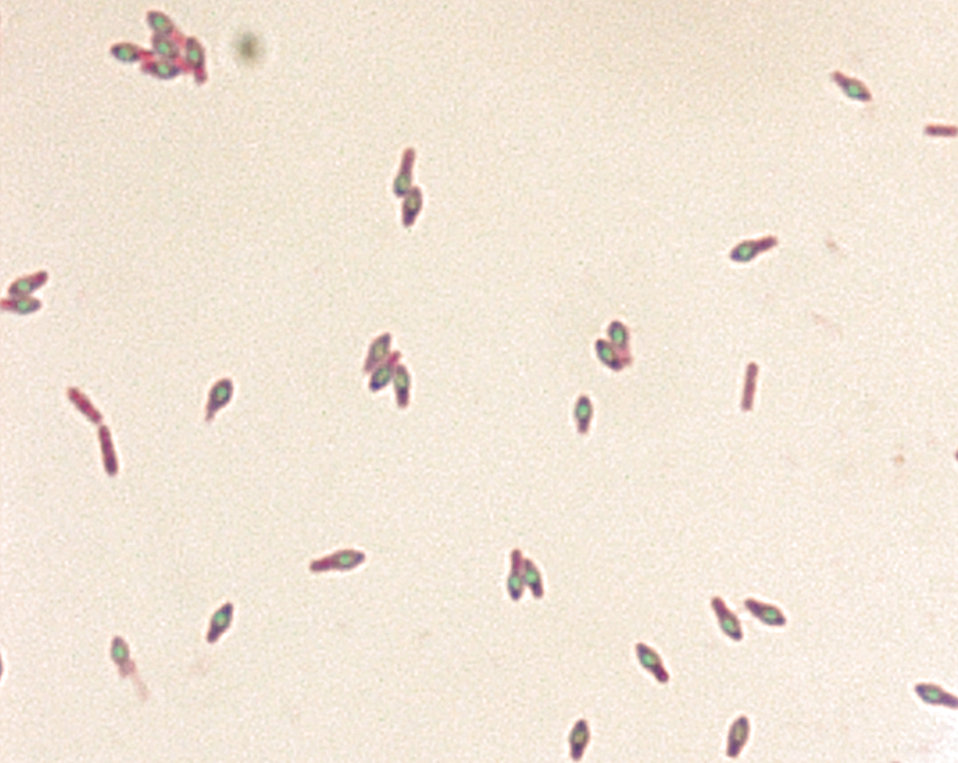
Clostridium botulinum spores stained with Malachite Green Stain.